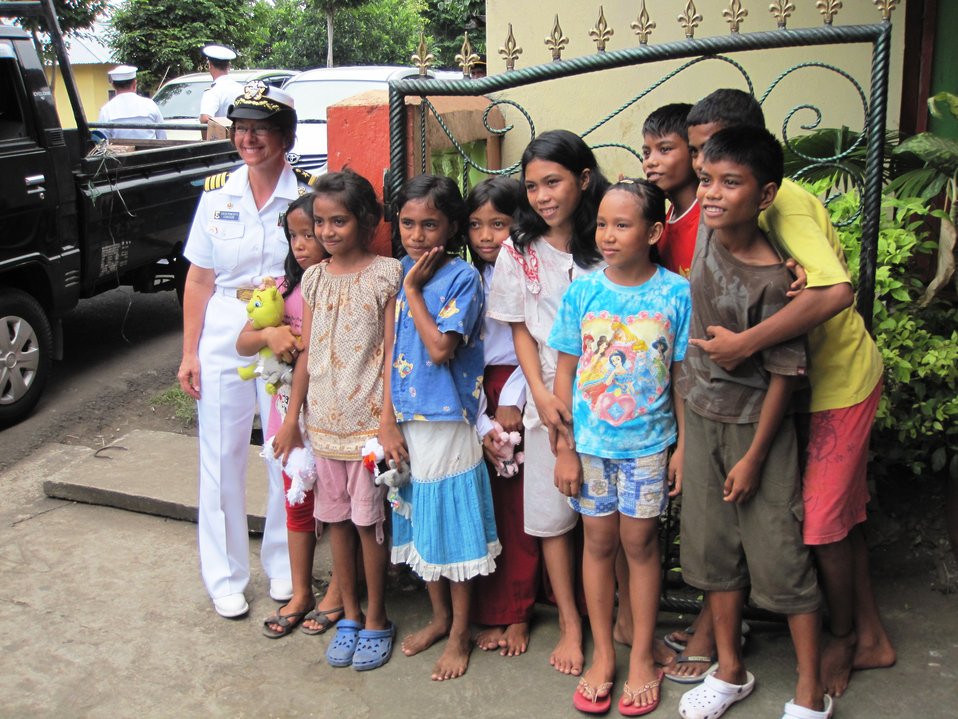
PP2010 Commander Capt. Franchetti Poses for a Photo With Indonesian Orphans

Pacific Partnership 2010 Commander Capt. Lisa Franchetti poses for a photo with children from an orphanage in Ternate, Indonesia, on July 18, 2010.